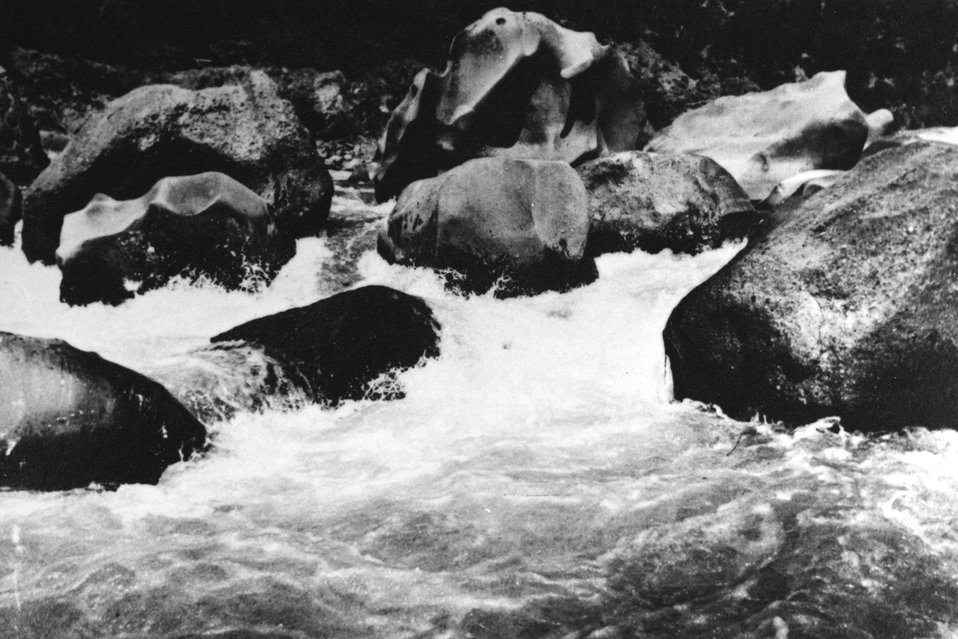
Blossom Bar before balsting C. 1920's